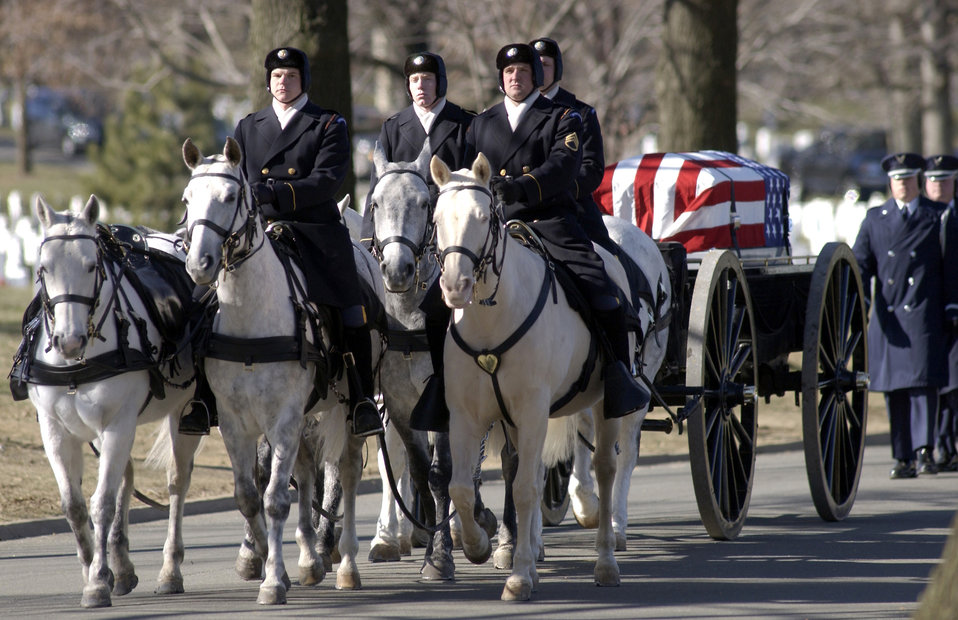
Servicemembers laid to rest

ARLINGTON, Va. -- Five military members who were killed when their MH-53M Pave Low helicopter crashed Nov. 23 in Afghanistan are carried to their final resting place by horse-drawn caisson during a full-honor mass funeral at Arlington National Cemetery on Jan. 21.